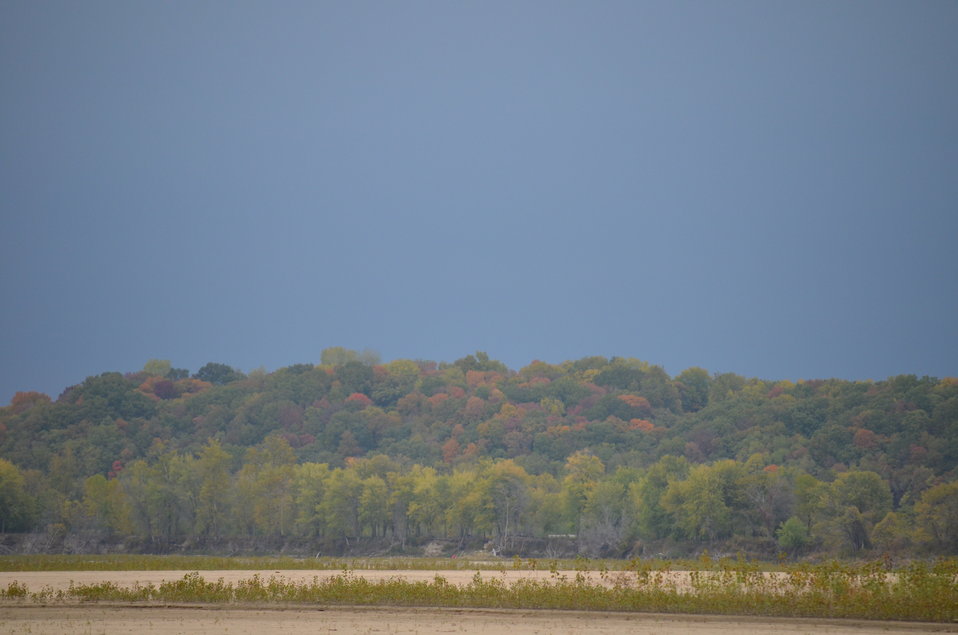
Fall foliage

Changing fall colors along Missouri River. USFWS/Ashley Spratt